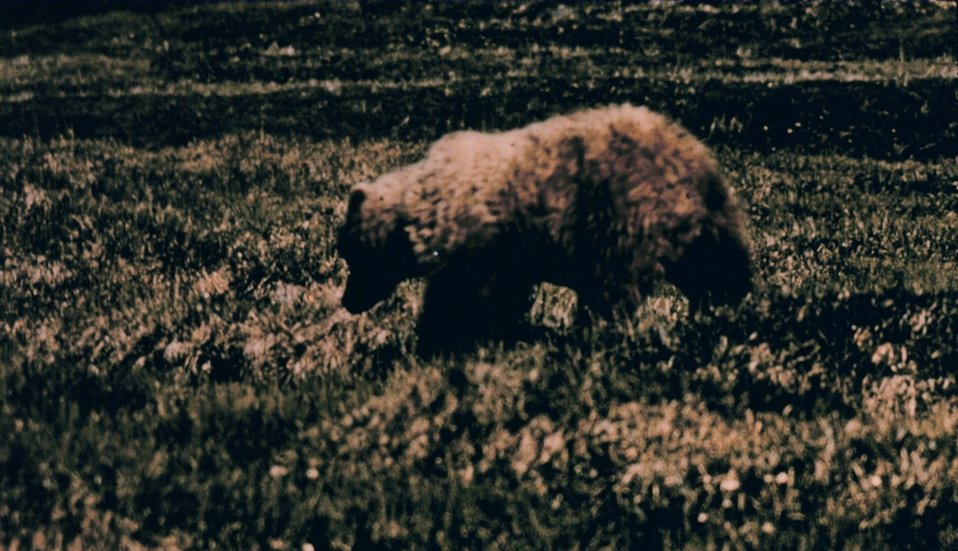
Brown bear (grizzly) - Ursus arctos - on the tundra.